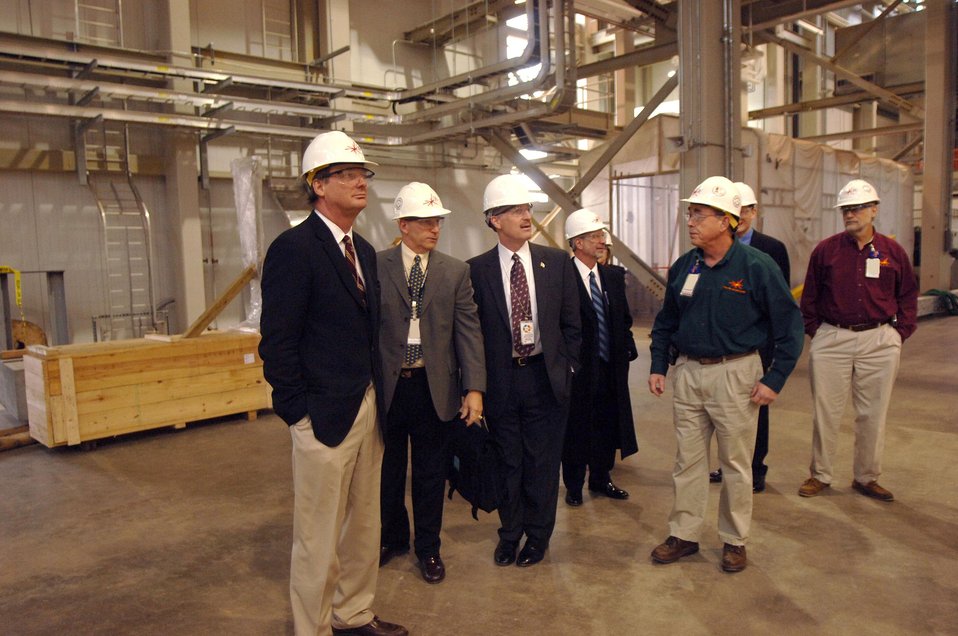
UNDER SECRETARY OF ENERGY DAVID GARMAN TOOK A TOUR OF THE SPALLATION NEUTRON SOURCE (SNS) AT OAK RIDGE NATIONAL LABORATORY (ORNL) IN DECEMBER 2005.

THE SPALLATION NEUTRON SOURCE (SNS) IS AN ACCELERATOR BASED NEUTRON SOURCE BEING BUILT IN OAK RIDGE, TENNESSE BY THE DEPARTMENT OF ENERGY. SCHEDULED FOR COMPLETION IN 2006, THE SNS WILL PROVIDE THE MOST INTENSE PULSED POWER NEUTRON BEAMS IN THE WORLD FOR SCIENTIFIC RESEARCH AND INDUSTRIAL DEVELOPMENT.